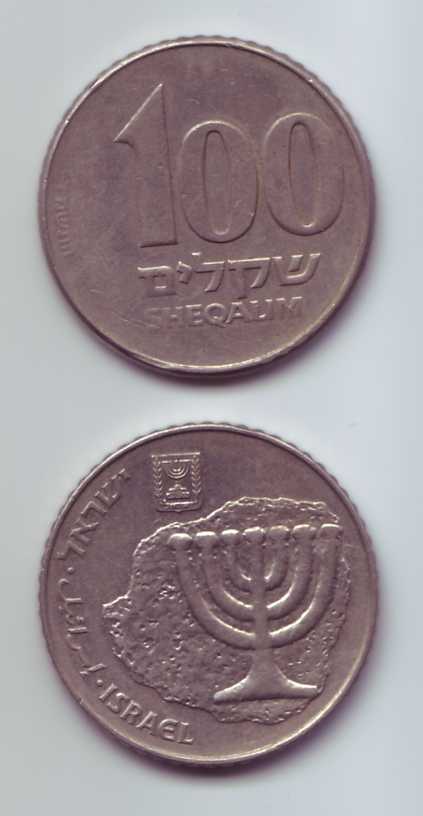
100 old Shekel coin dated התשמ'ד